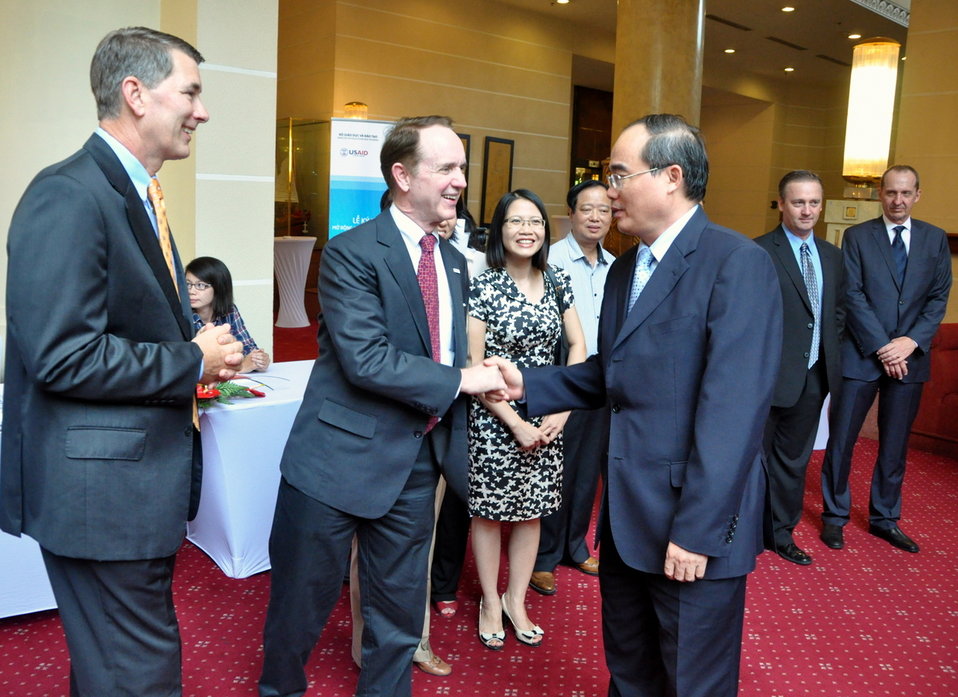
Higher Engineering Education Alliance Program Expansion Launch

Hanoi, August 20, 2012.